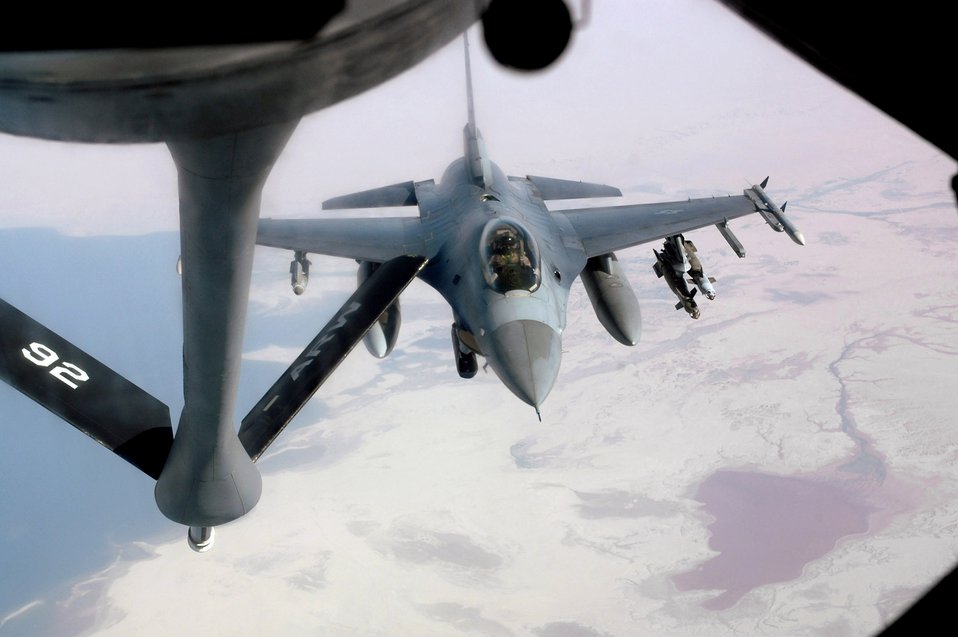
Gas on the go

An F-16 Fighting Falcon approaches a KC-135 Stratotanker May 19 over central Iraq to refuel while supporting Operation Iraqi Freedom. The KC-135 is deployed from Fairchild Air Force Base, Wash., and the F-16 is deployed from Aviano Air Base, Italy.